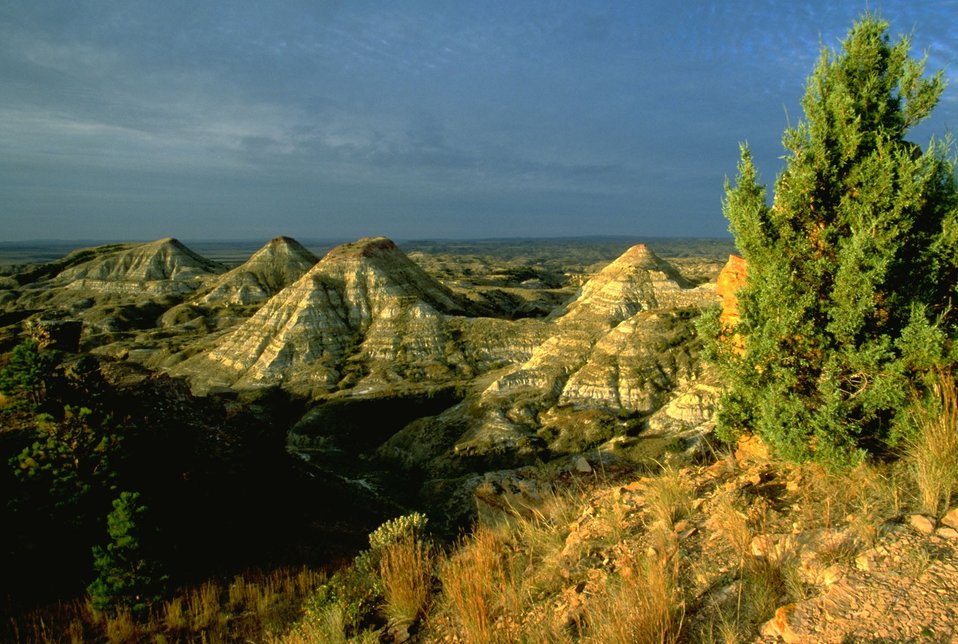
A tree standing guard over the Terry Badlands